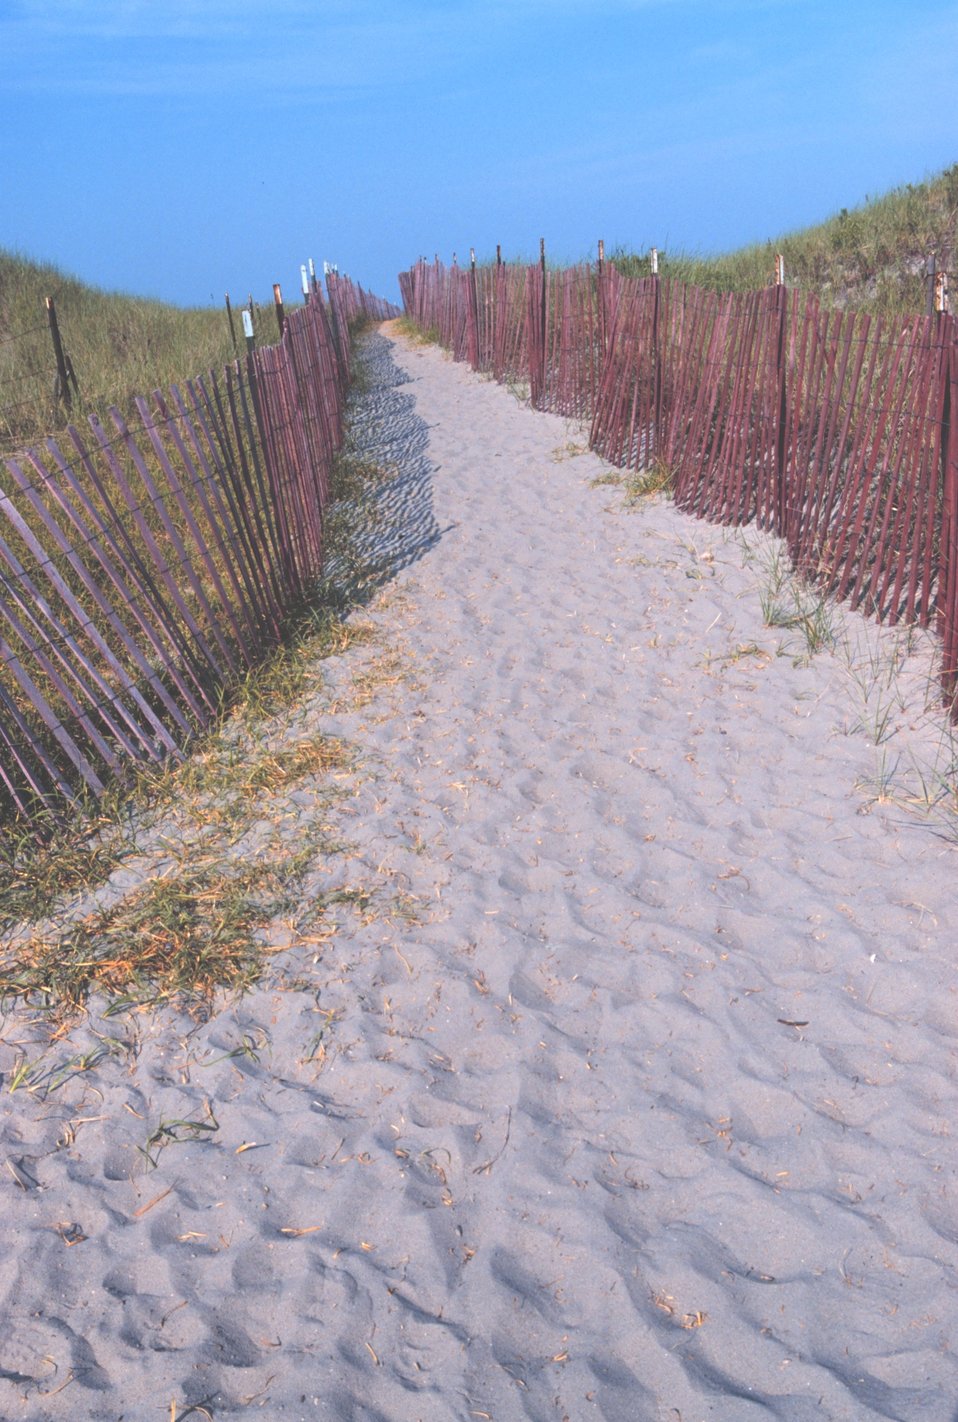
A path through the dunes